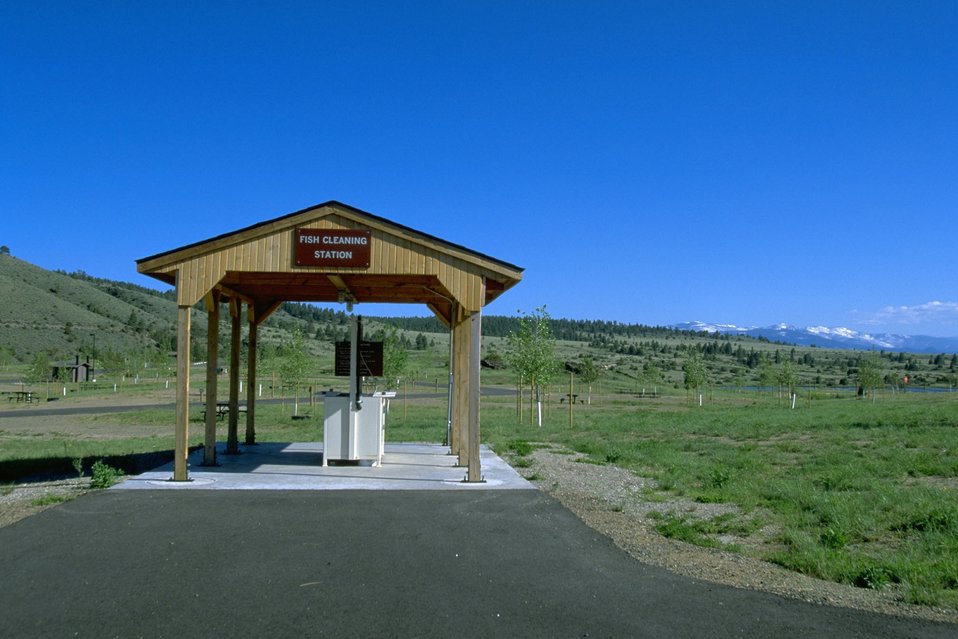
Fish Cleaning Station at Devils Elbow Campground